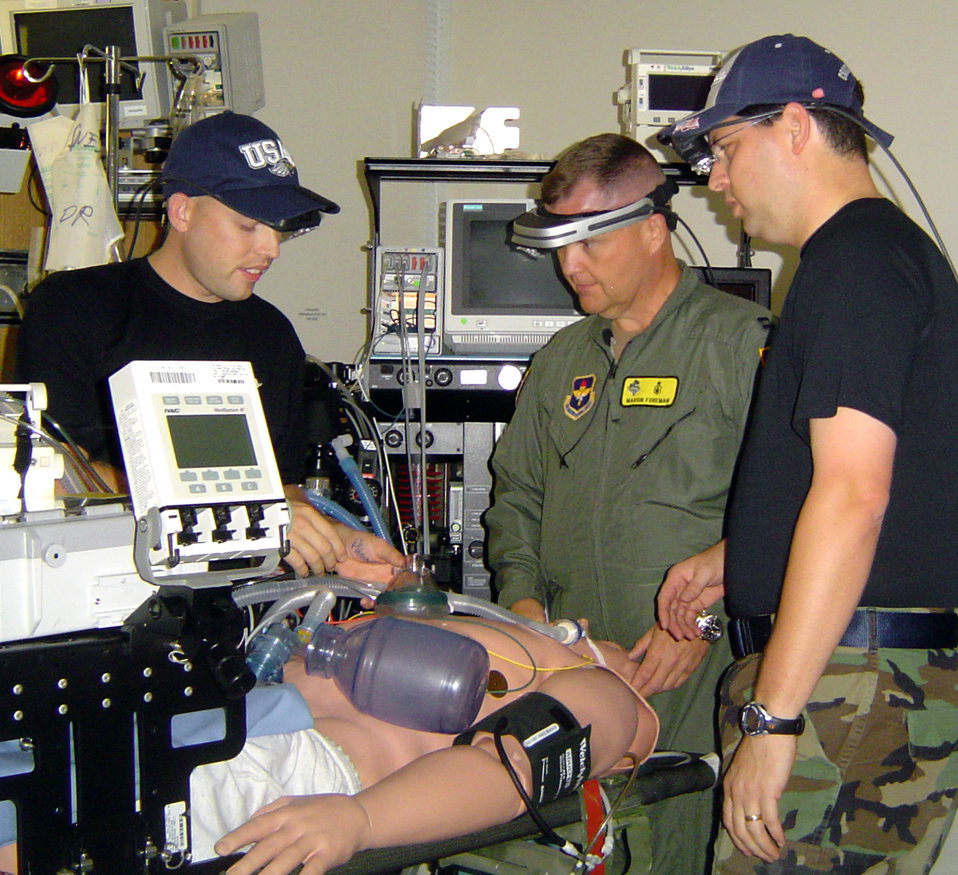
Technology offers high-tech patient monitoring

(From left) Staff Sgt. Matthew Falat, Capt. Marion Foreman and Maj. (Dr.) Mike Meyer test medical heads-up displays, or MHUDs, in the Wilford Hall Medical Center simulation center at Lackland Air Force Base, Texas. The MHUDs were developed by staff at the Air Warfare Battlelab at Mountain Home Air Force Base, Idaho. The hats were props used during the evaluation phase.